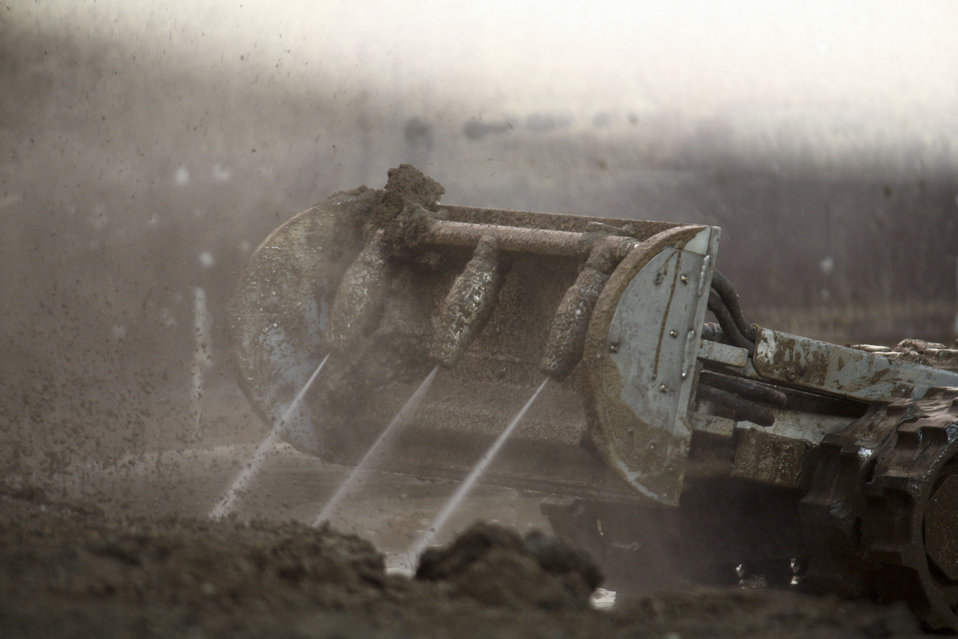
The Foldtrack is a retrieval tool that can be inserted into the tank using existing access ports to position itself on the bottom of the tank or upon the hard top layer of waste.

It is designed to move tank waste using the blade along the front of the unit toward the pump positioned in the center of the tank that moves tank waste from single-shell tanks to double-shell tanks. It also has several high pressure water nozzles used to blast the waste and reduce the size of the tank waste particles to make the waste easier to pump.